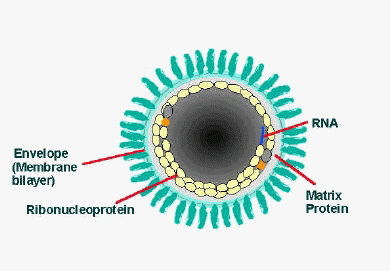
Illustration of rabies virus in cross section.